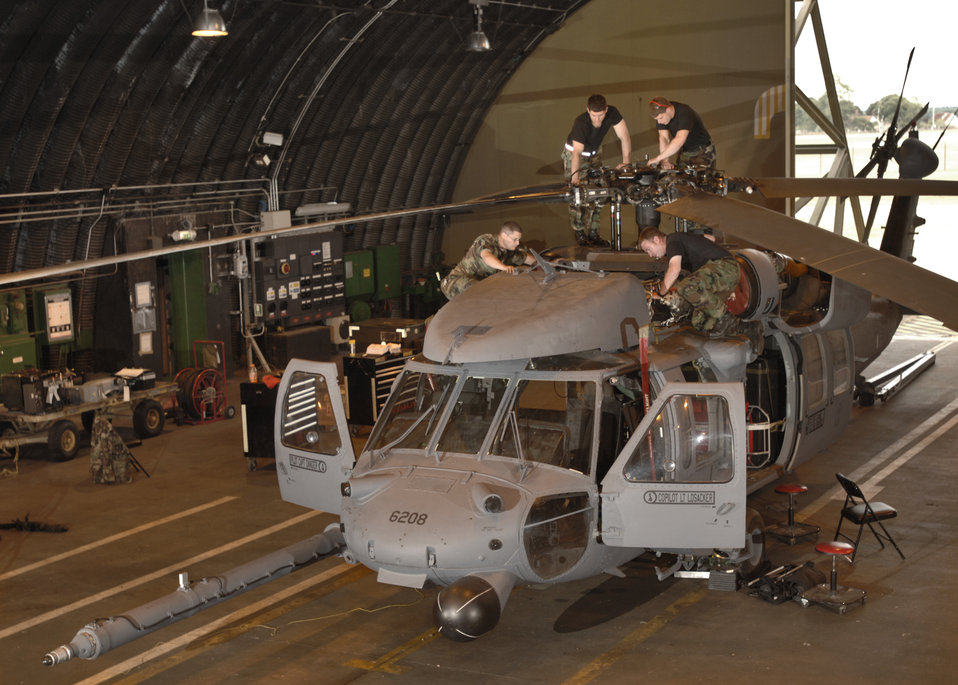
Rescue unit faces moving challenges

(Clockwise from left) Staff Sgt. Cleve Bury, Airmen 1st Class Antonio Yabarra and Jake Sexton and Senior Airman William Simpson work on an HH-60G Pave Hawk helicopter at Royal Air Force Lakenheath, England, on Aug. 2. The Airmen are crew chiefs with the 56th Aircraft Maintenance Unit.